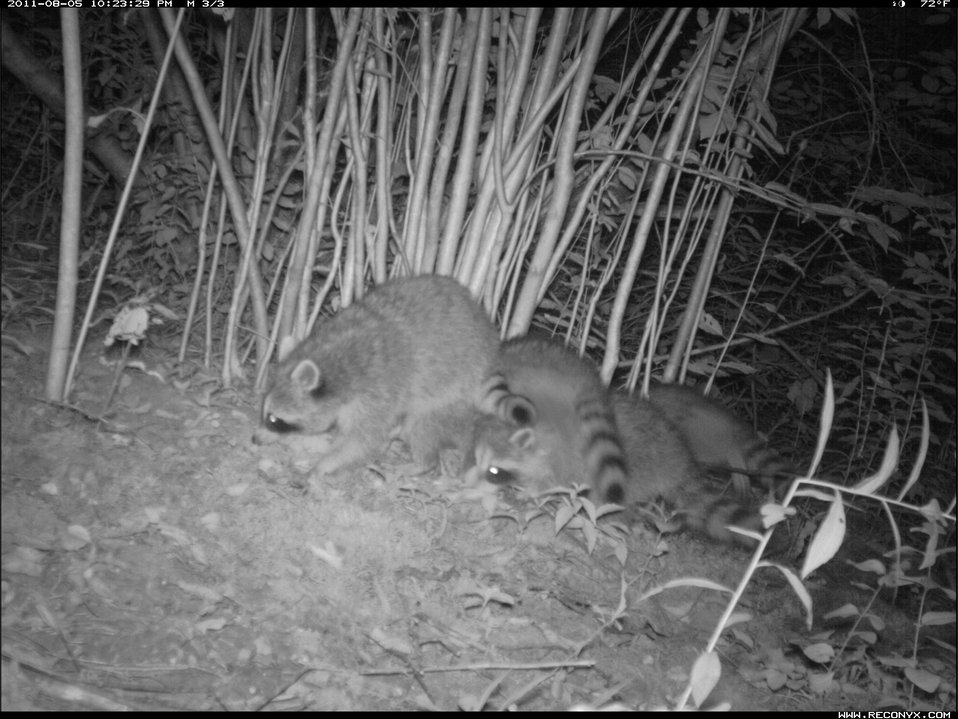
Raccoon family